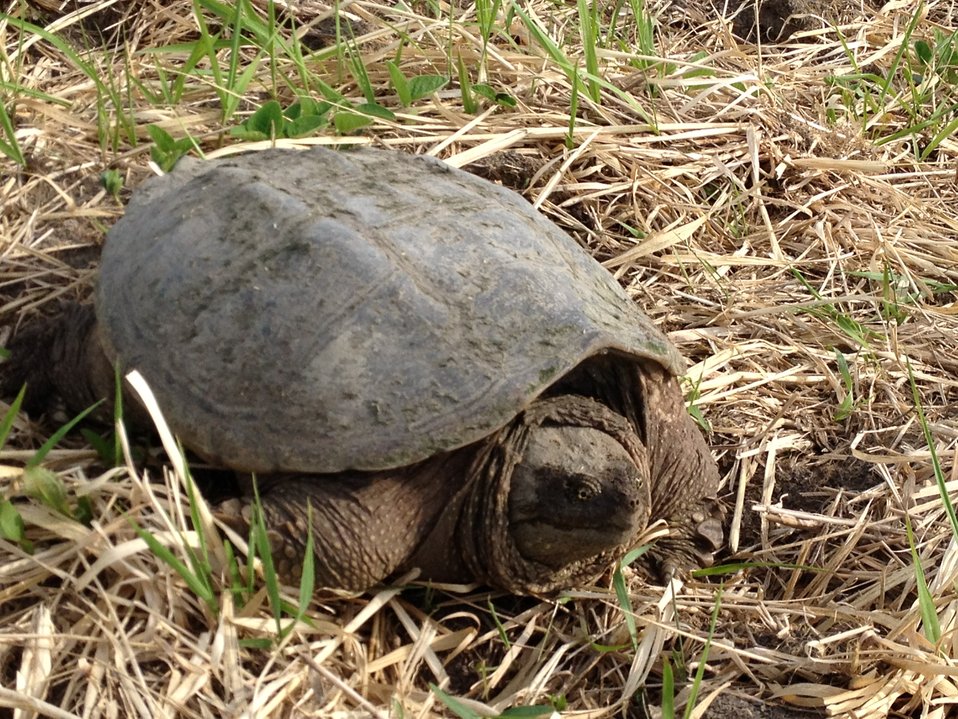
WPA WILDLIFE

Snapping Turtle